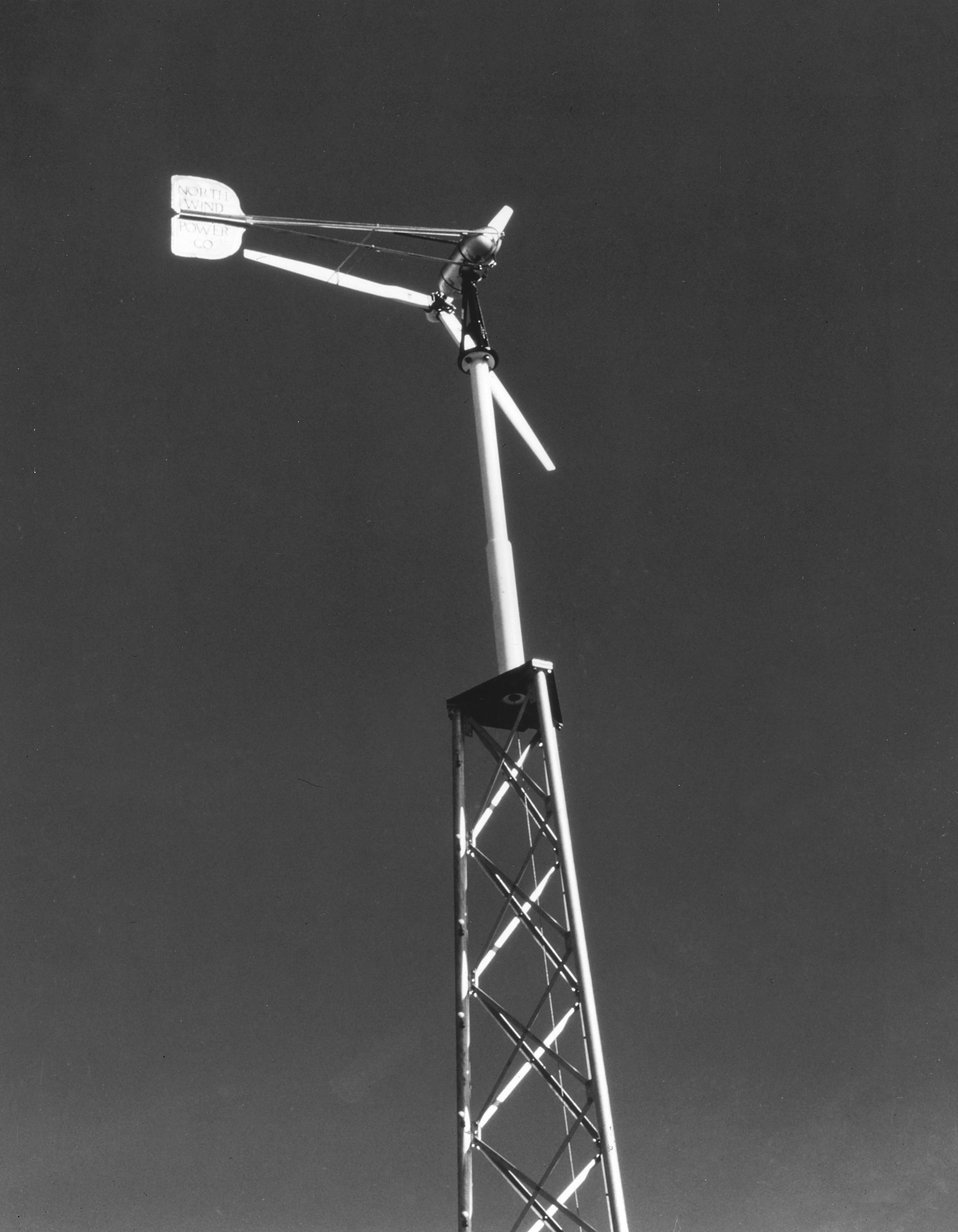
The Jacobs wind energy conversion system was popular in the 1930s, and rebuilding old Jacobs machines has become a popular activity in the 1970s among people looking for alternate energy resources for farms and rural buildings. c. 1977